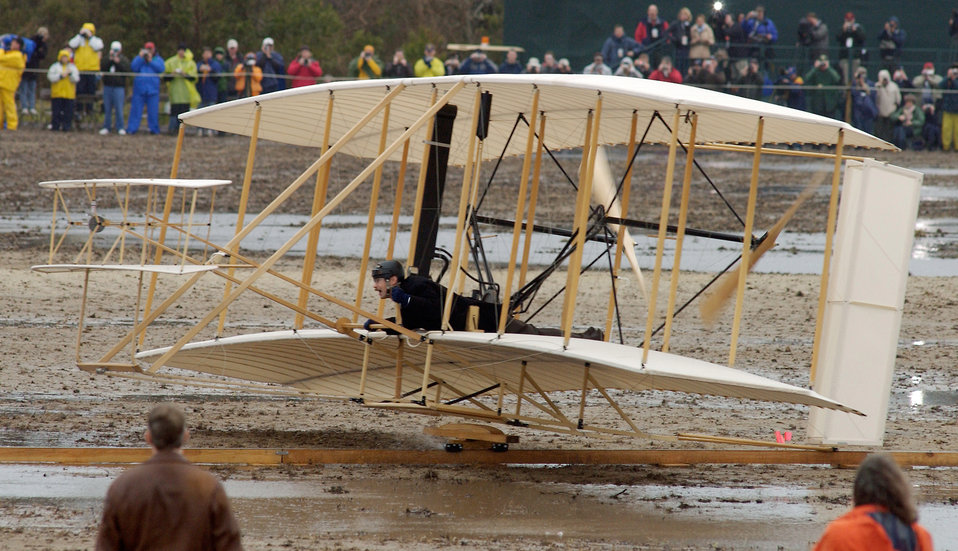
Centennial of Flight, Kitty Hawk, N.C.

KILL DEVIL HILLS, N.C. -- Pilot Kevin Kochersberger rides a replica of the Wright brothers' original 1903 flyer down a 180-foot rail in his first attempt to re-enact the